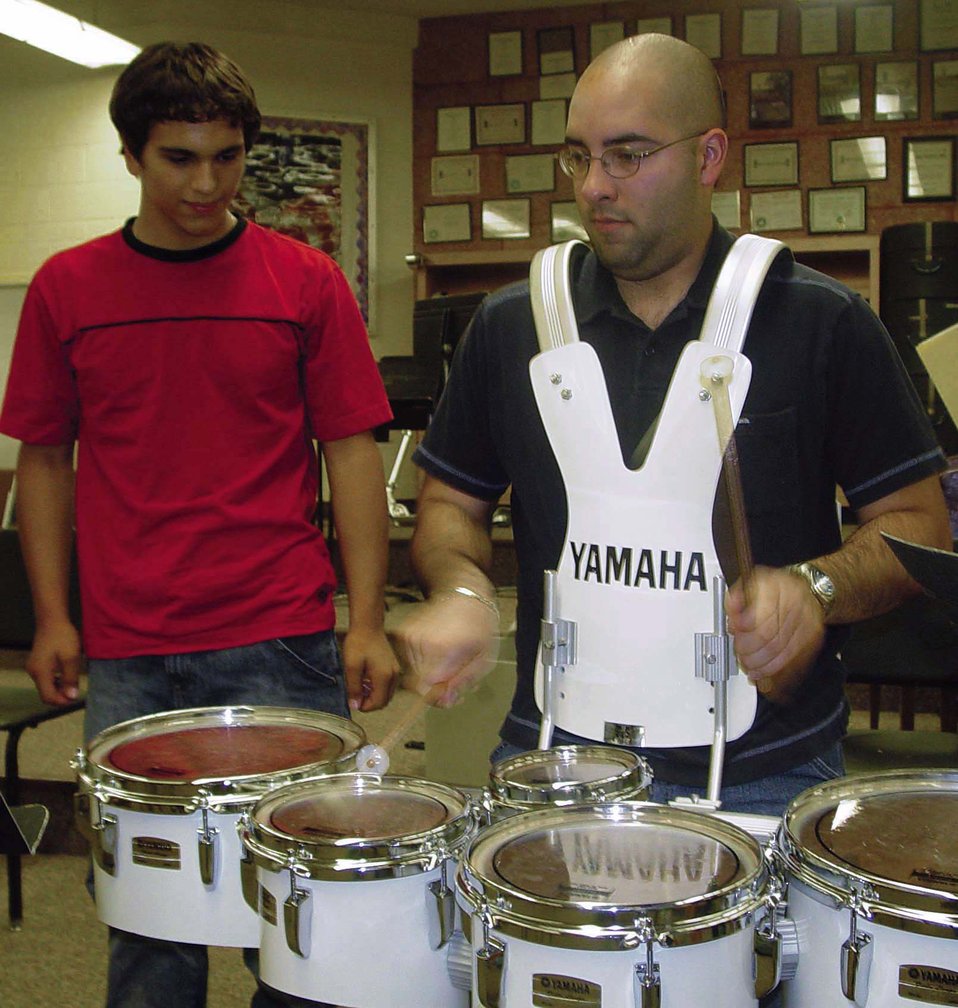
Drum line teaches leadership

MINOT, N.D. -- Joel Collins watches as 1st Lt. Jamiel Vadell plays the quints drum set during practice at a high school here. Lieutenant Vadell is a drum line coach at the school and a 741st Missile Squadron deputy missile combat crew commander at nearby Minot Air Force Base.